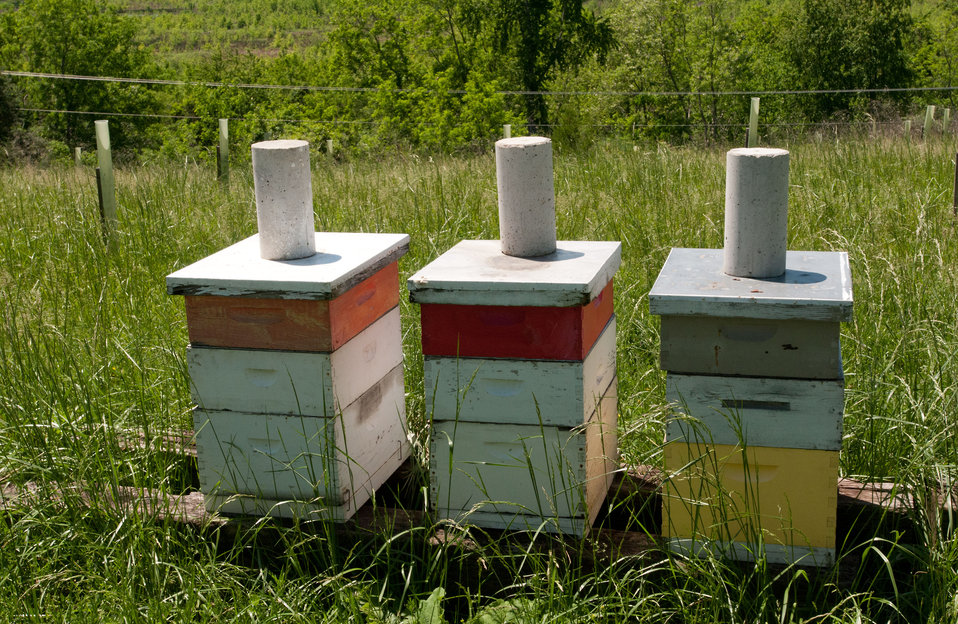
Three of the 80 bee hives of Brookview Farm in Manakin-Sabot, VA, on Thursday, May 5, 2011, that produce honey for Fall Line Farms, a local food cooperative in the Richmond, VA area that offers a wide variety of household food staples and specialty items on an ever changing inventory of fruits, vegetables, meats, soaps, eggs, cheeses, flowers, honey, pastas, sauces, syrups, baked goods, mushrooms, flour and grains. Suppliers post what they have on a Lulus Local Food online listing and customers can make their selection. Every Thursday suppliers deliver orders to, one of several pick-up points, designated by the customers in or around the Richmond area.